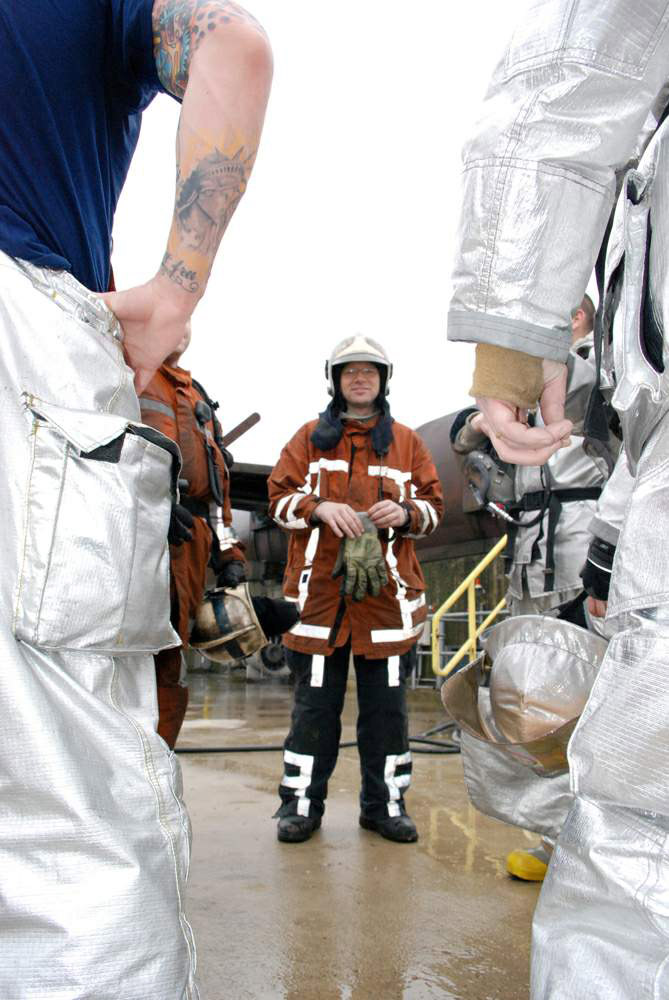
Dutch, U.S. air forces unite for training

Dutch Sgt. Maj. Henri Meiringh gives firefighters from the 309th Airlift Squadron feedback at the Woensdrecht Firefighting Training Facility. The members of the 309th Airlift Squadron are from Chievres Air Base, Belgium. Sergeant Major Meiringh is a facilitator at the simulator.